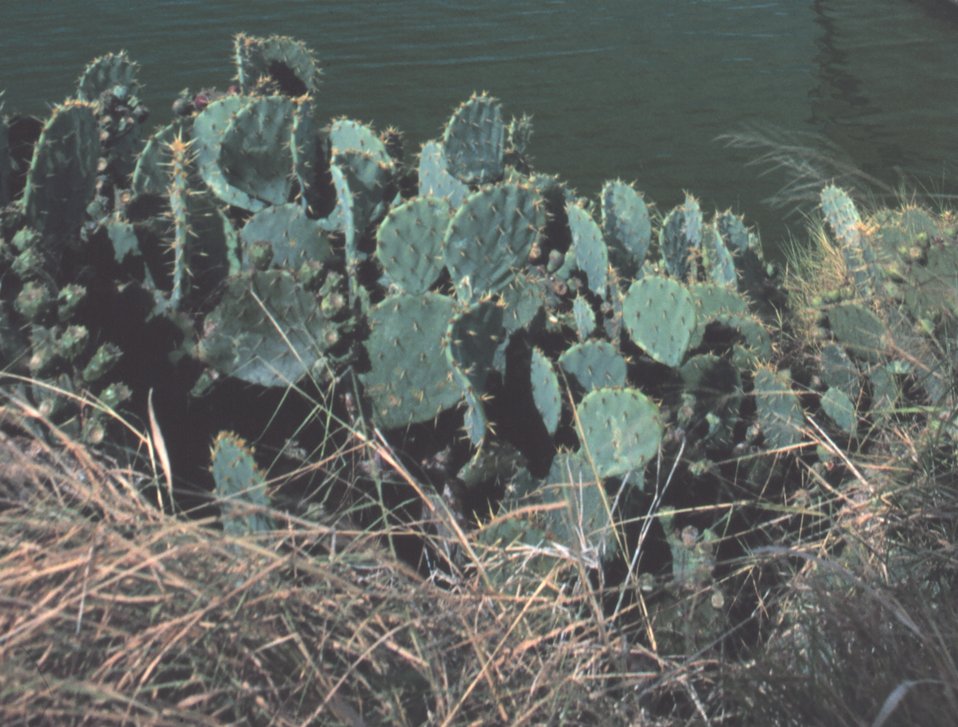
Beaver tail cactus growing next to the port at Port Isobel